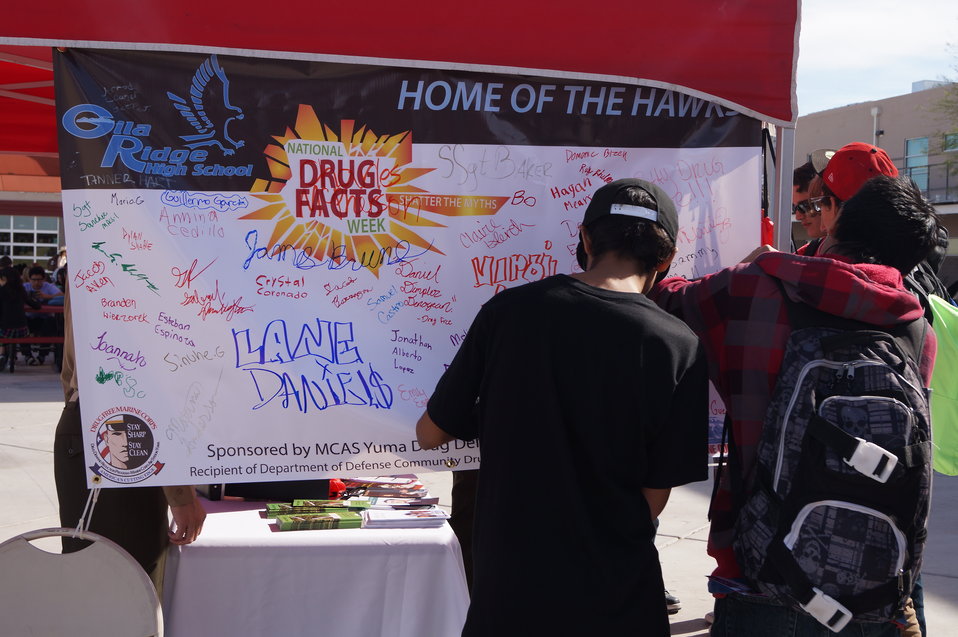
National Drug Facts Week - GILA RIDGE HS

The Drug Demand Reduction Program out of Yuma Arizona held numerous events at local schools to support NIDA's National Drug Facts Week, Jan. 27-Feb. 2 2014. Teens participated in drug awareness games, and helped to Shatter the Myths about teen substance abuse.